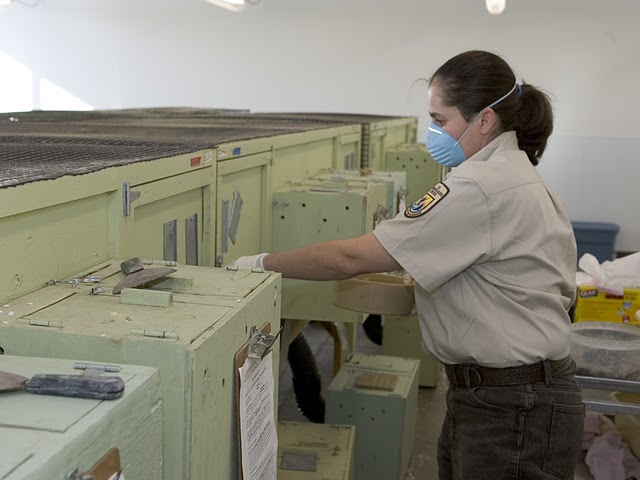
National Black-footed Ferret Conservation Center